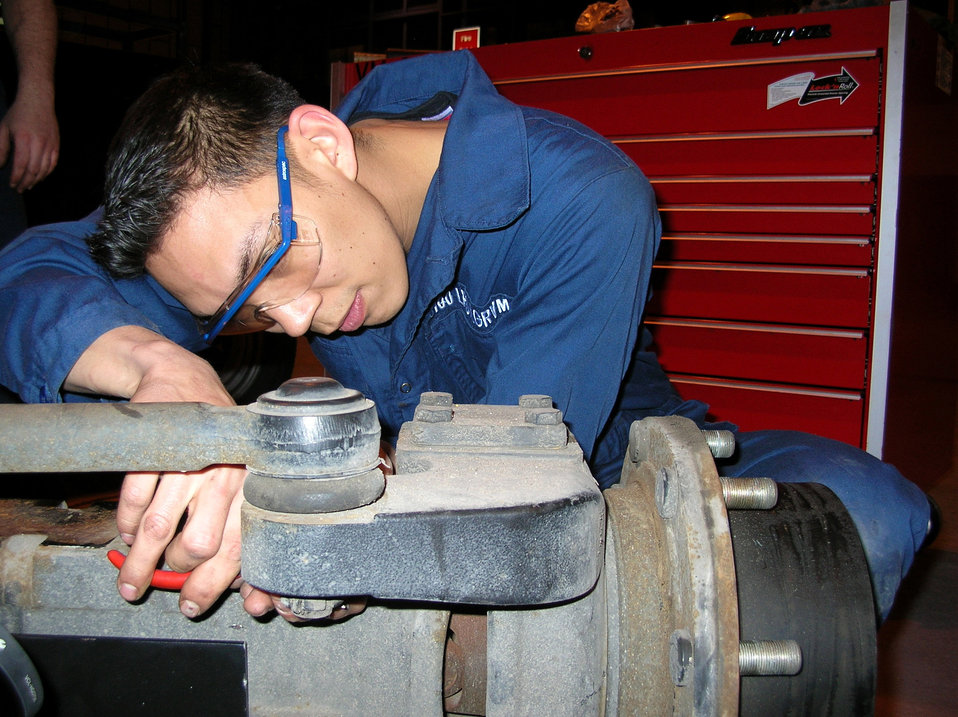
Vehicle maintenance Airmen use AFSO 21 initiatives

Staff Sgt. Lee Samson works on a 1,500-pound axle removed from an aircraft tow vehicle Feb. 1 at Royal Air Force Mildenhall, England. He is perfecting an Air Force Smart Operations for the 21st Century initiative to improve the procedures for removing and working on the axle. Sergeant Samson is a vehicle mechanic with the 100th Logistics Readiness Squadron.